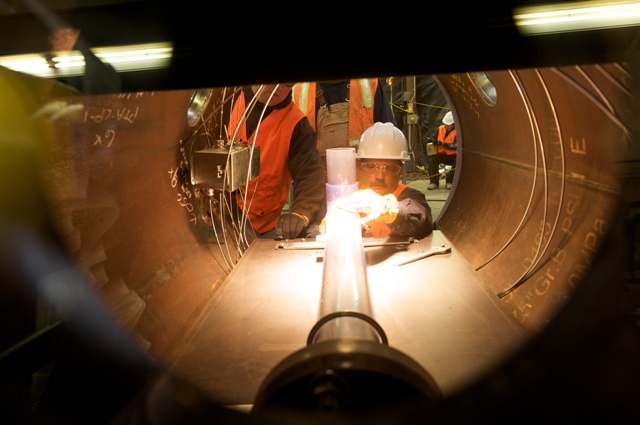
EBR II Idaho

Engineers prepare a mockup of the Experimental Breeder Reactor II’s internal parts for a test run.